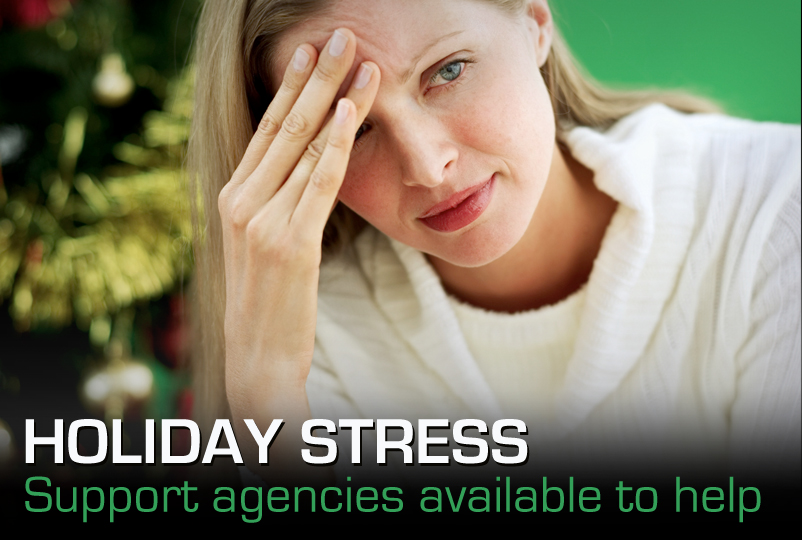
Support agencies help Airmen, families manage holiday stress